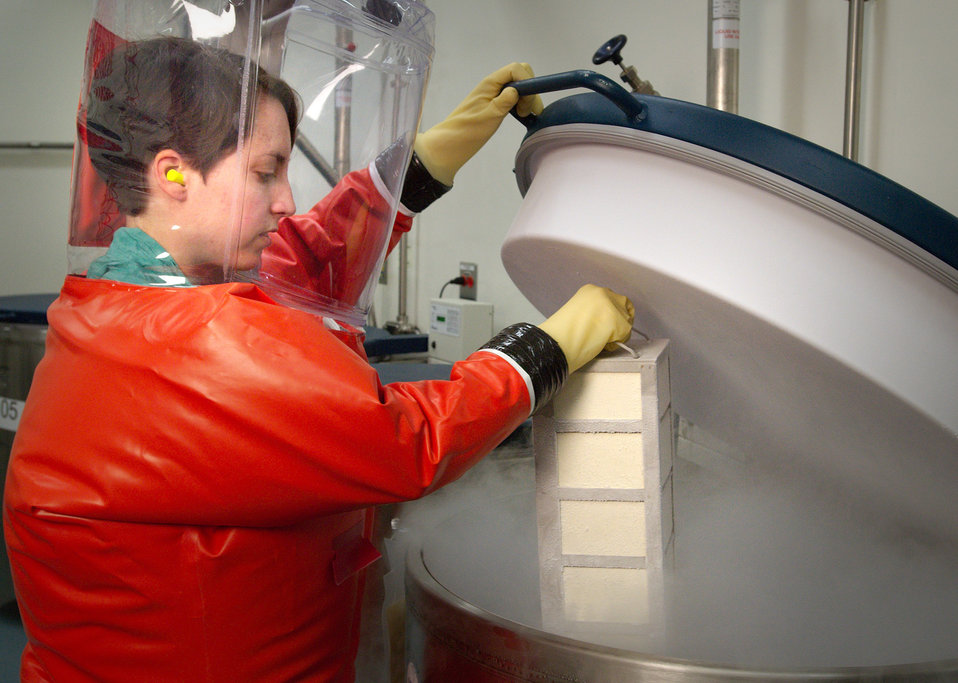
Depicted here in this 2007 photograph, was a Centers for Disease Control microbiologist, and Special Pathogens Branch (SPB) staff member in the process of inserting a rack of boxes containing biological stocks into a liquid nitrogen freezer where they would be stored.